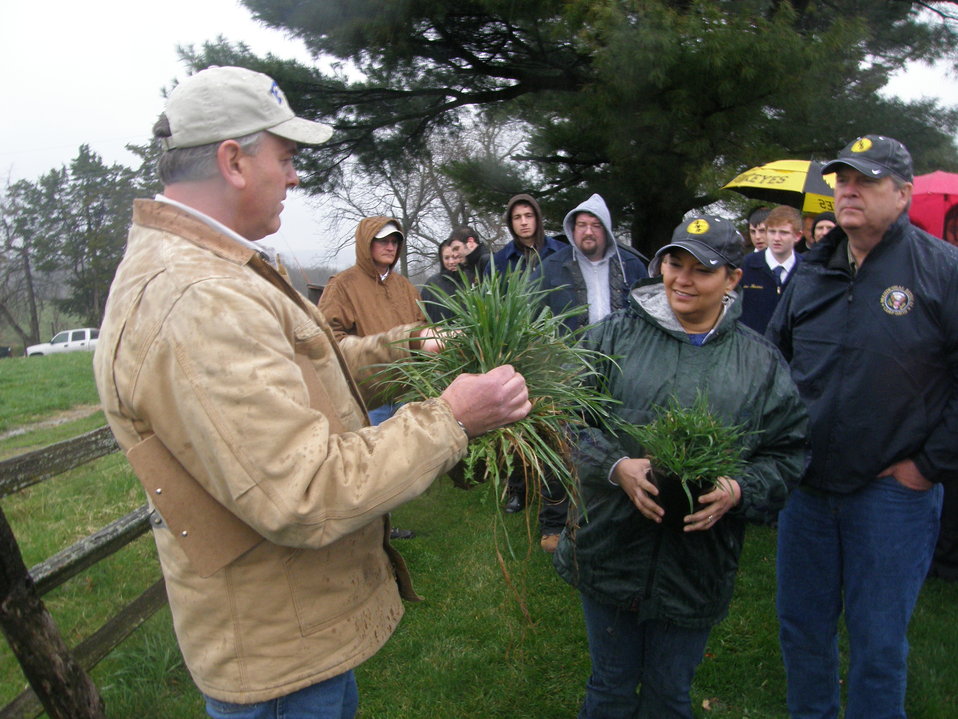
Monty Collins (left) talks to Environmental Protection Agency Administrator Lisa P. Jackson and Agriculture Secretary Tom Vilsack about the environmental benefits of rotational grazing techniques used with his 30-head cow/calf operation near Pleasantville, IA, on Tuesday, April 19, 2011.